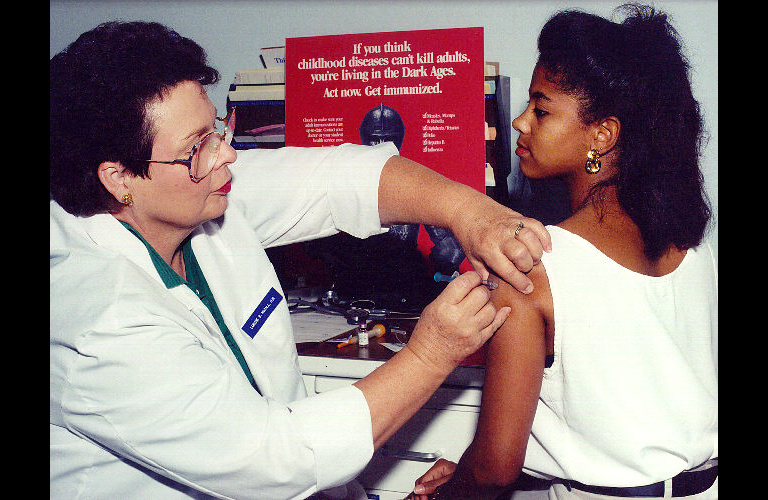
Adult immunization.